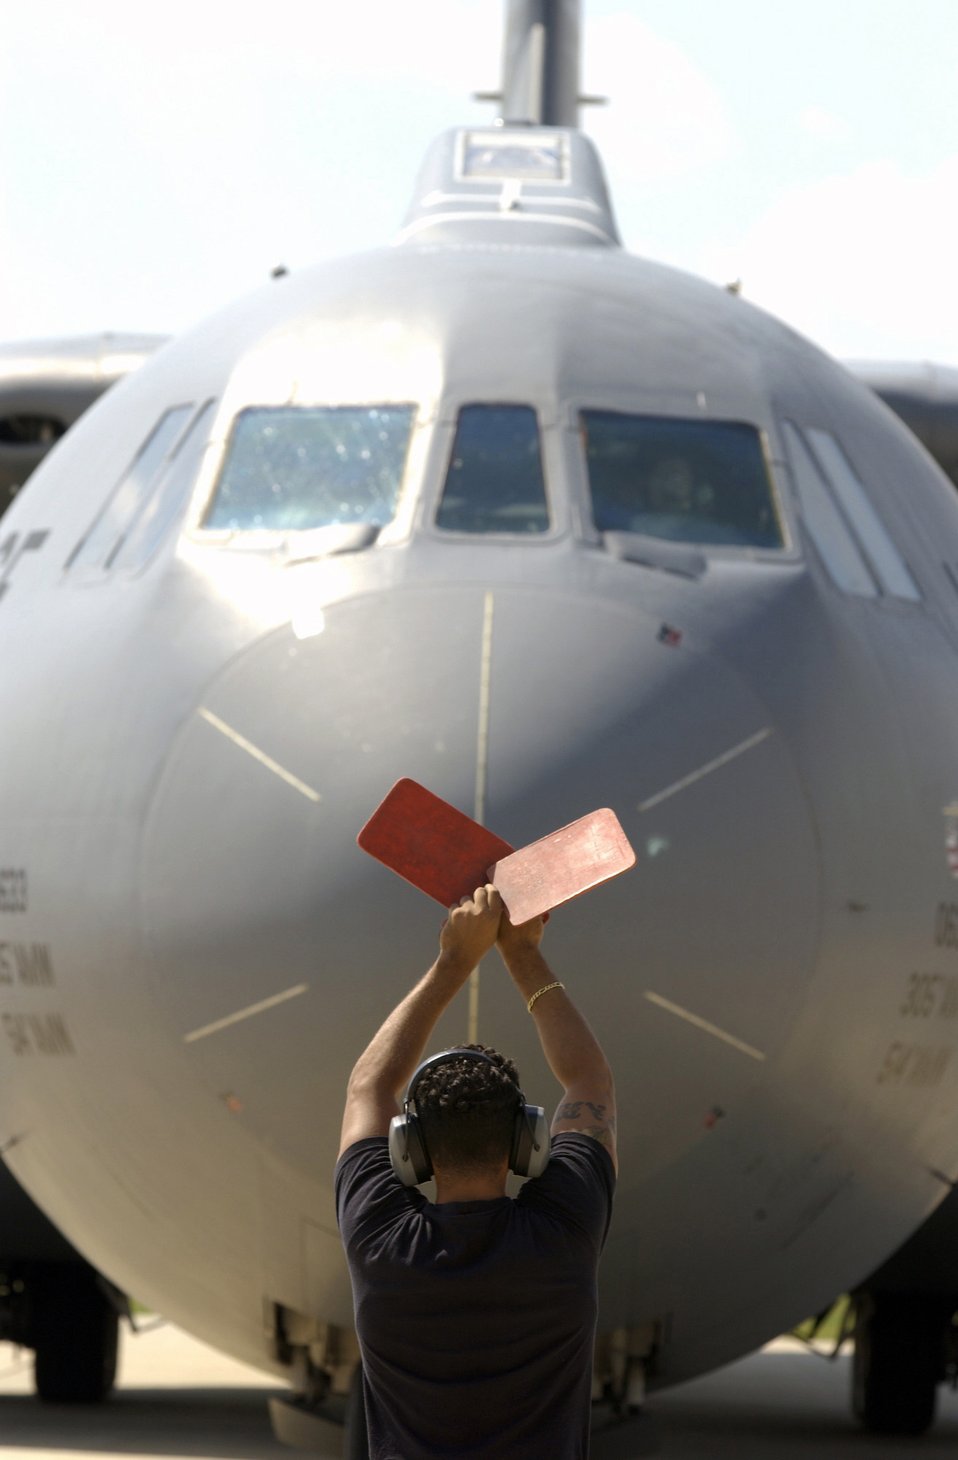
When it's over

MCGUIRE AIR FORCE BASE, N.J. - Senior Airman Paul DeJesus marshals in a C-141B Starlifter from its final flight here Sept. 1. The C-141B Starlifter is being retired from the active- duty Air Force inventory on Sept. 16. After 40 years of service and nearly nine million flying hours, the aircraft has a proven reliability and long-range capability in worldwide airlift for combat support missions, and to humanitarian relief.